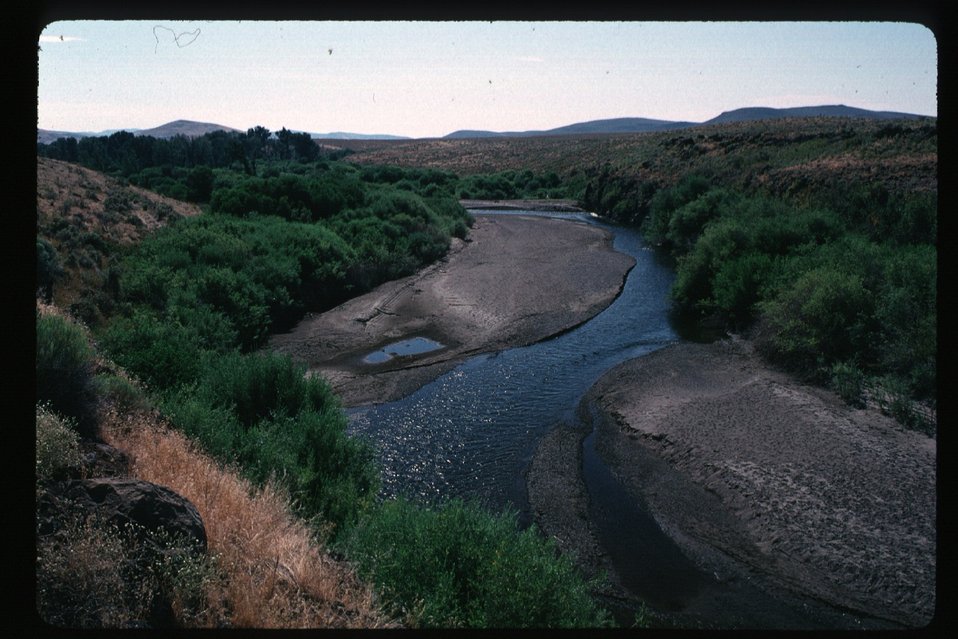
Big Wood River Scenic USRD Upper Snake River District